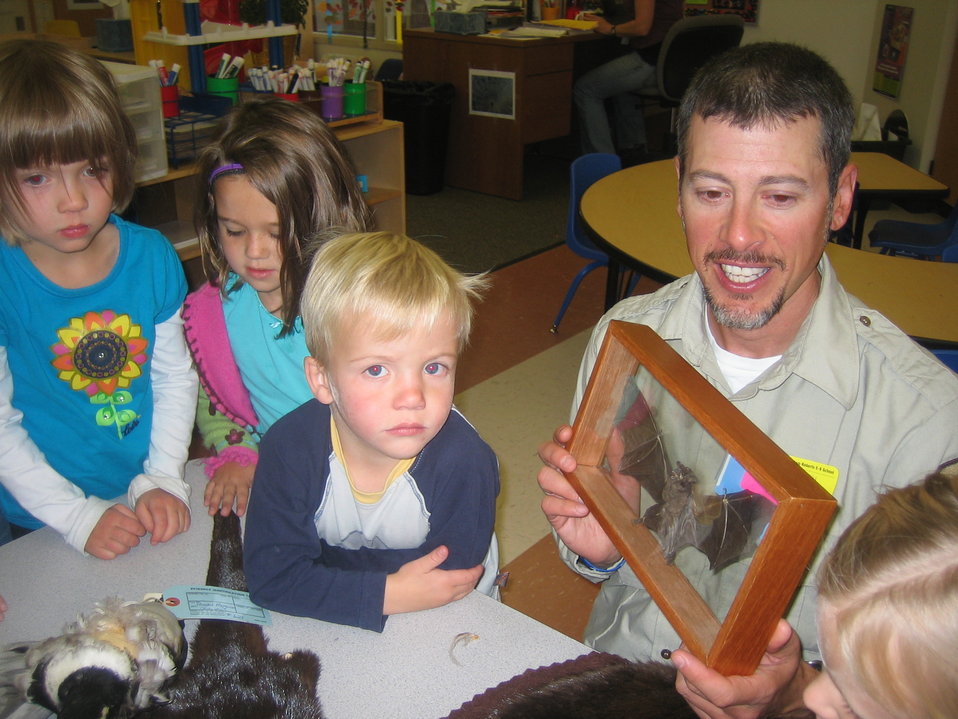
Scientists in the Community Program

U.S. Fish and Wildlife Service Mountain-Prairie Region Deputy ARD for External Affairs, Matt Kales, introduces early childhood education students at William Roberts Elementary School in Denver to some of Colorado's native and historic wildlife species.